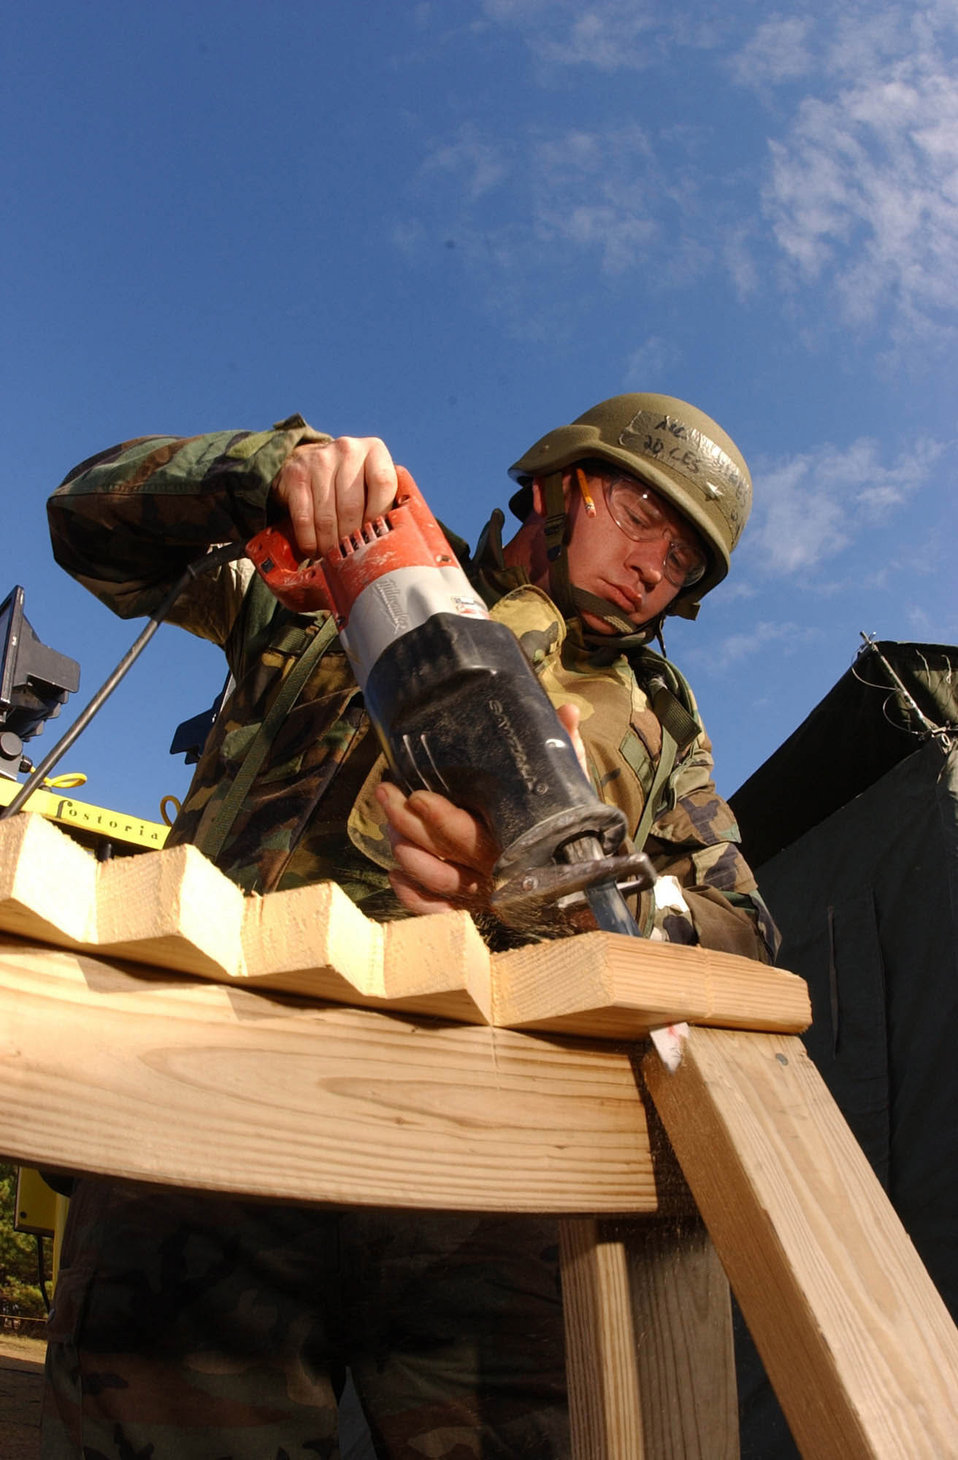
The builder

SHAW AIR FORCE BASE, S.C. -- Airman 1st Class David Hines uses a jig-saw to cut out notches in the top board of a rifle rack he is building for Operational Readiness Exercise Sea Lion 2002.